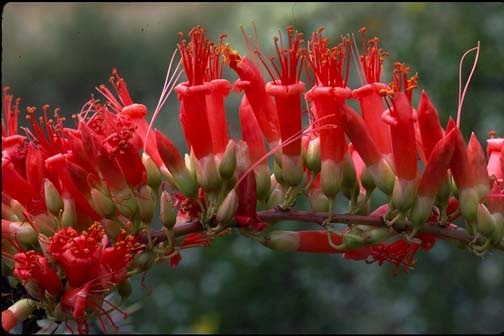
Ocotillo cactus in full bloom.